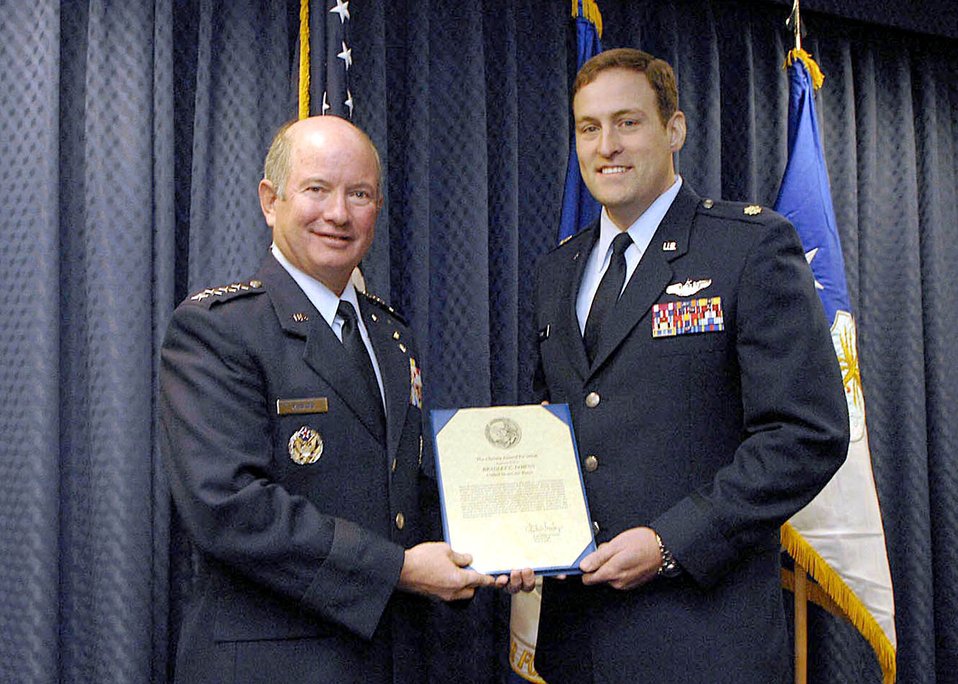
Air Force officers earn Cheney Award

Air Force Vice Chief of Staff Gen. Duncan J. McNabb presents Maj. Bradley Downs the Cheney Award for his actions in southern Afghanistan. The Cheney Award is presented each year in memory of 1st Lt. William Cheney, who was killed in an air collision over Italy in 1918. Major Downs is an MC-130H Combat Talon II pilot.